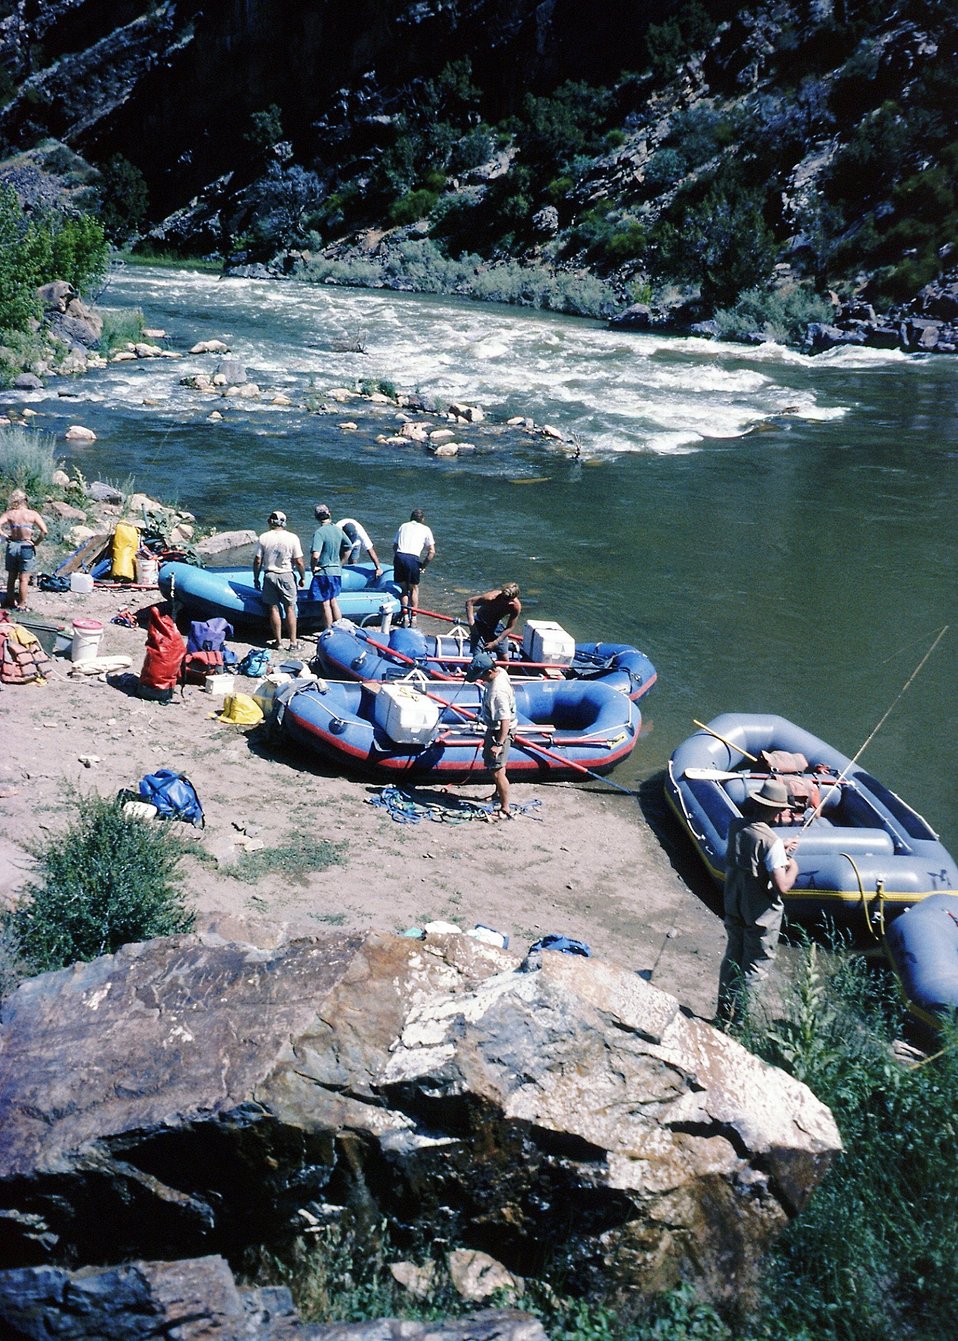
Raft Putu